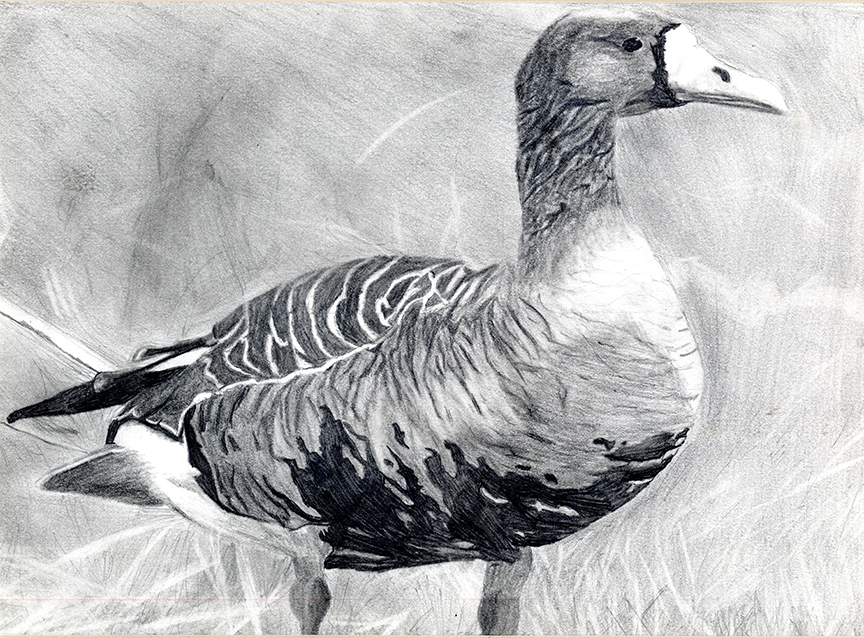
JRDuck2013AR

2013 Junior Duck Stamp Best of Show-Arkansas